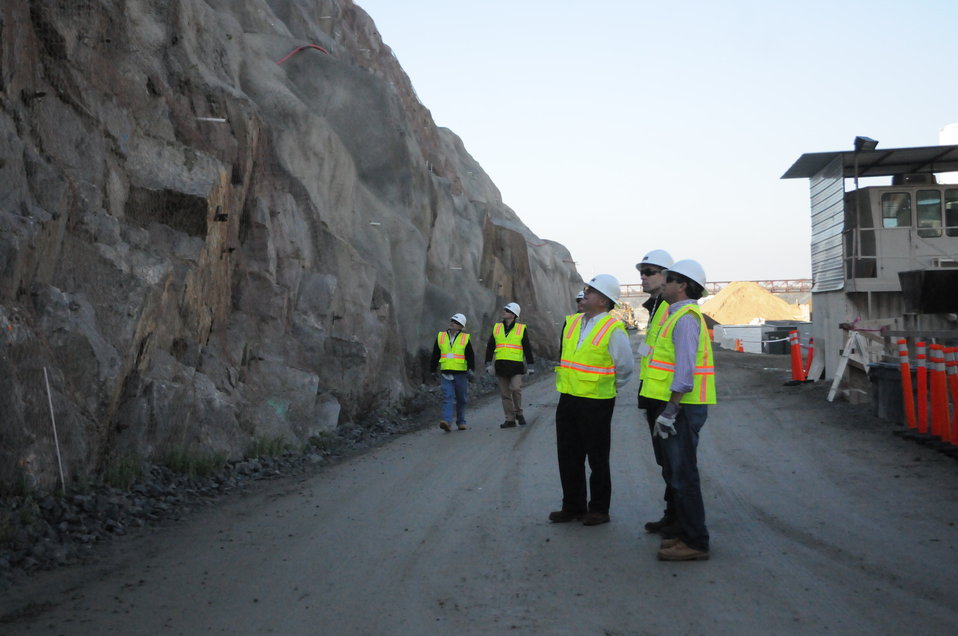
Phase IV Contractors Visit Construction Site

Construction contractors visited the Folsom Dam auxiliary spillway Feb. 3, 2013 to get a final walkthrough of the project before submitting their proposals to work on the fourth phase of the project. Potential contractors walked the site for hours comparing maps and schematics, and observing geological features and granite core samples. Proposals must be submitted before Feb. 25 and contracts are expected to be awarded sometime in May.